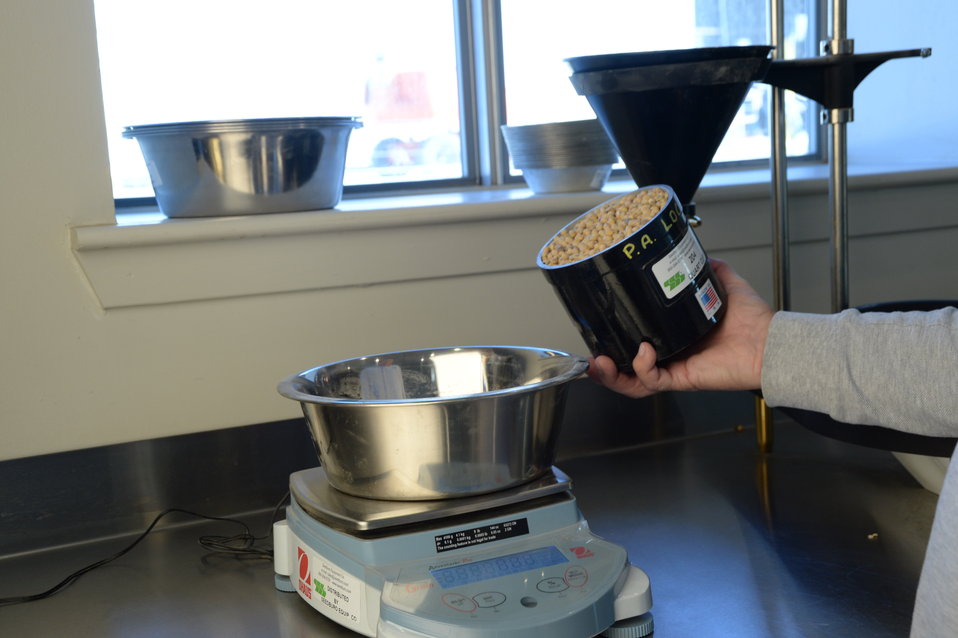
U.S. Department of Agriculture (USDA) Grain Inspection, Packers and Stockyards Administration (GIPSA) Federal Grain Inspection Service (FGIS) employee weighs U.S. grain ready for export near the Port of New Orleans in New Orleans, LA on Tuesday, Nov. 19, 2013.